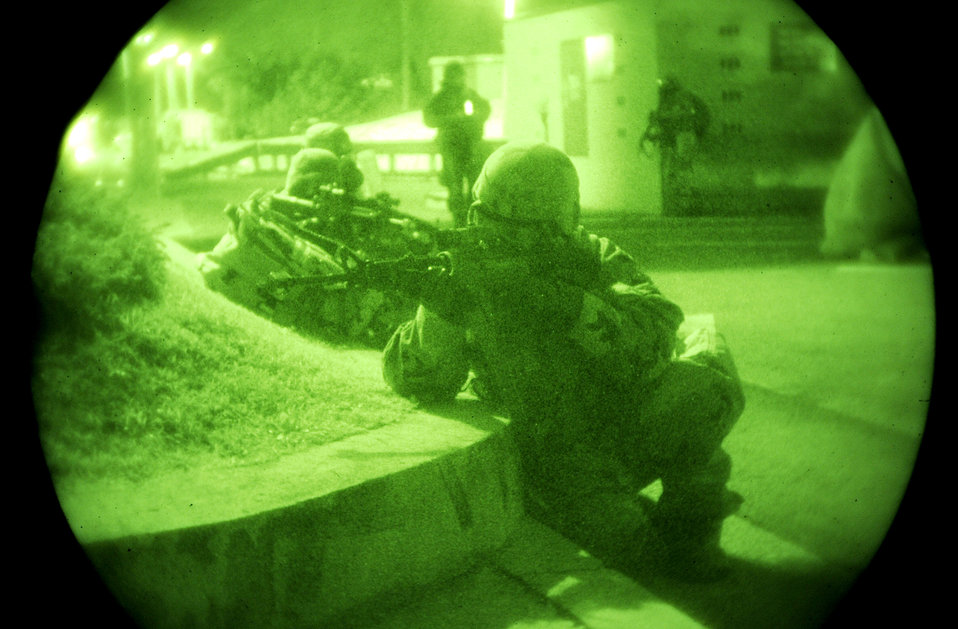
Night exercise at Osan Air Base

Airmen from the 51st Security Forces Squadron fight off